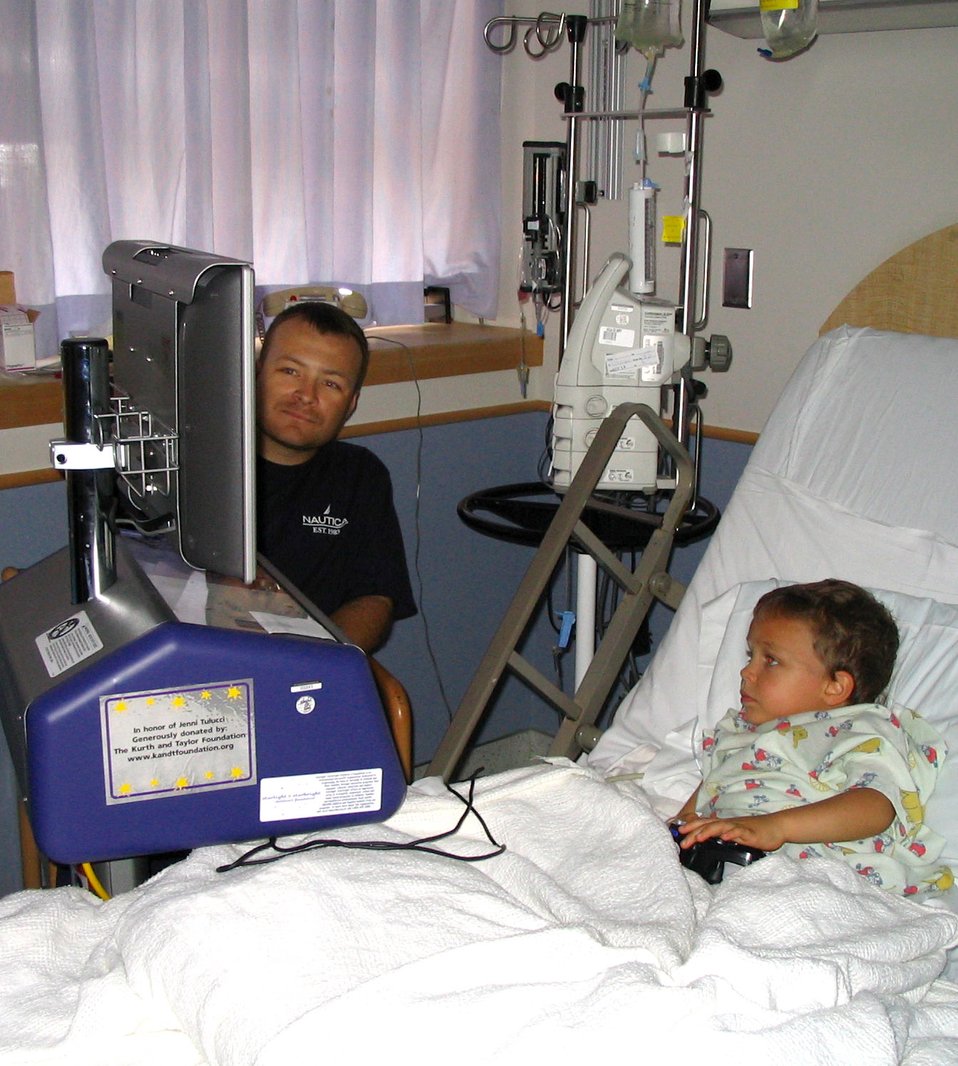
Kidney transplant

VANDERBERG AIR FORCE BASE, Calif. (AFPN) -- Tech. Sgt. Jeff Pitman and his son, Devin, 4, play video games during their recoveries from kidney transplant surgeries Sept. 14. Sergeant Pitman is in the 533rd Training Squadron.